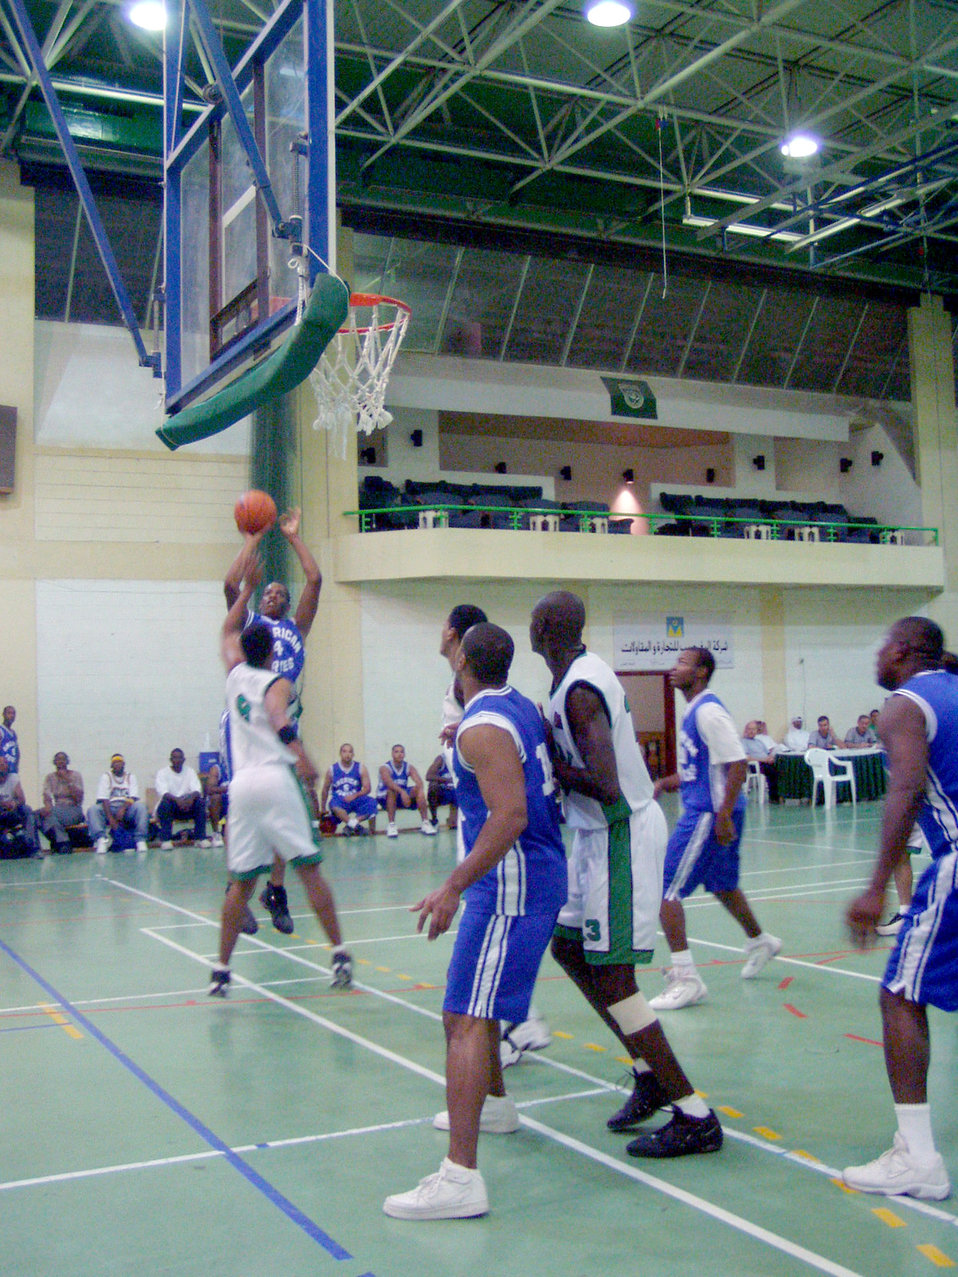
Shootin' hoops

DOHA, Qatar -- American Will Spencer (4) shoots for two in a scrimmage game here Oct. 22 against Al Ahli. Spencer and his teammates will become the first Americans to play in the nation's capitol city league Nov. 9. Spencer is an airman first class assigned to the 1st Expeditionary Red Horse Group at Al Udeid Air Base and is deployed from Nellis Air Force Base, Nev.